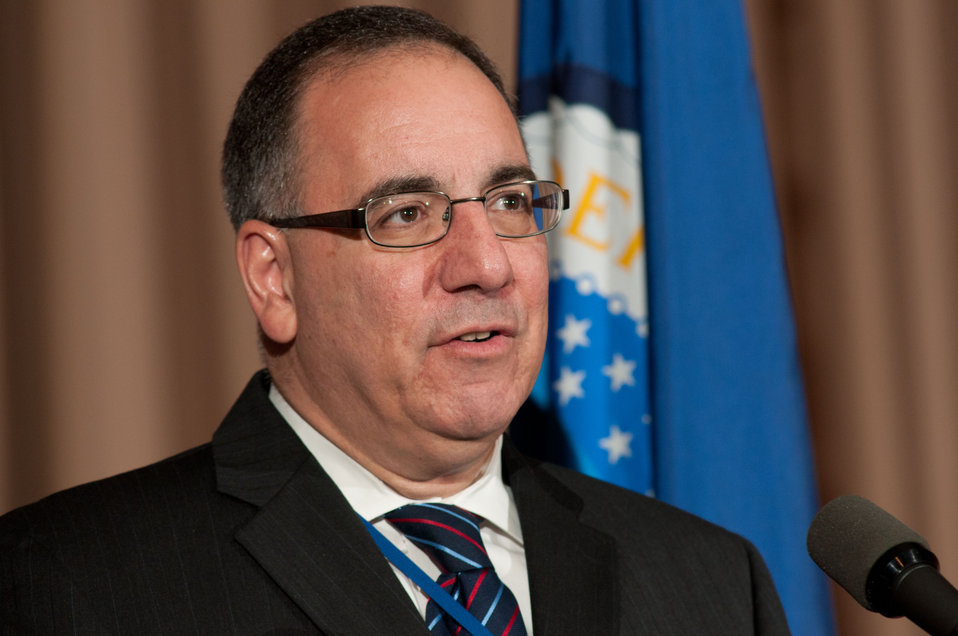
United States Department of Defense Civilian Personal Policy and Chief of Human Capital Officer Pasquale Tamburrino, Jr. addresses the Work Force Recruitment Program’s (WRP) 'Your Key To Hiring Student Interns and Employees with Disabilities” event hosted by the United States Department of Agriculture (USDA) in the Jefferson Auditorium, Washington, D.C. on Tuesday, February 7, 2012.